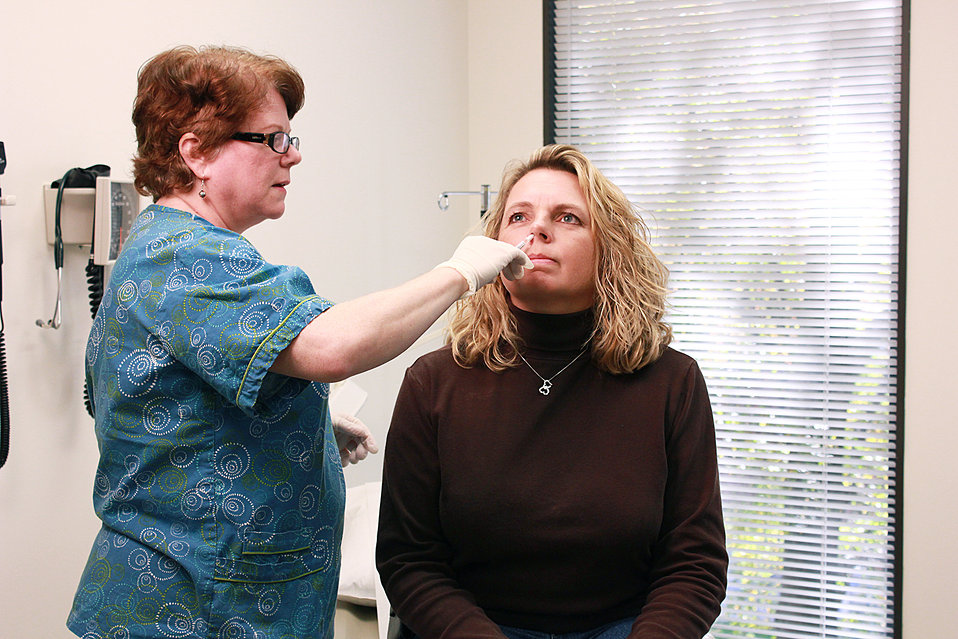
This image depicts a qualified nurse in a clinical setting, who was in the process of administering a dosage of FluMist� live attenuated intranasal vaccine LAIV) into the right nostril, and into this patient's nasal cavity. Note that the nurse's hands were gloved, thereby, avoiding the possibility of cross-contamination.